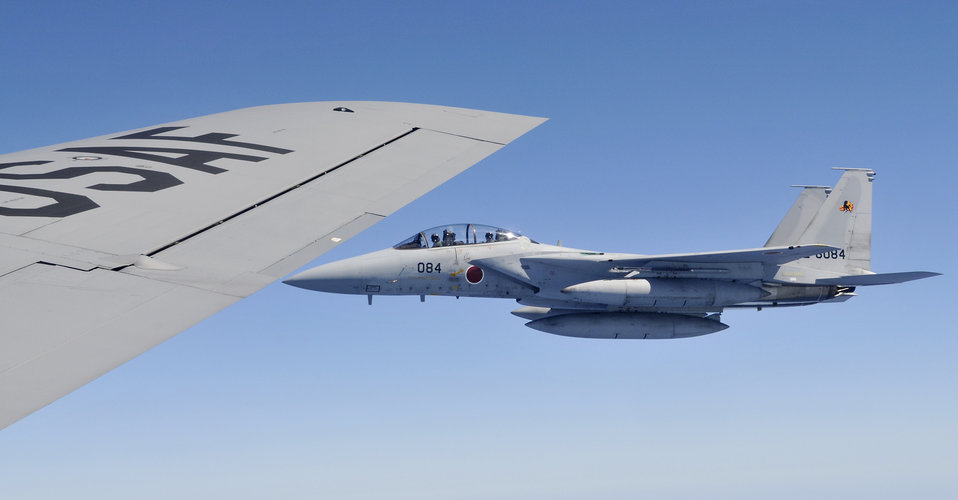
Airmen prepare JASDF pilots

A Japan Air Self Defense Force F-15 Eagle waits to refuel just beyond the wingtip of a 909th Air Refueling Squadron KC-135 Stratotanker during bilateral air refueling training May 17, 2010, at Kadena Air Base, Japan.